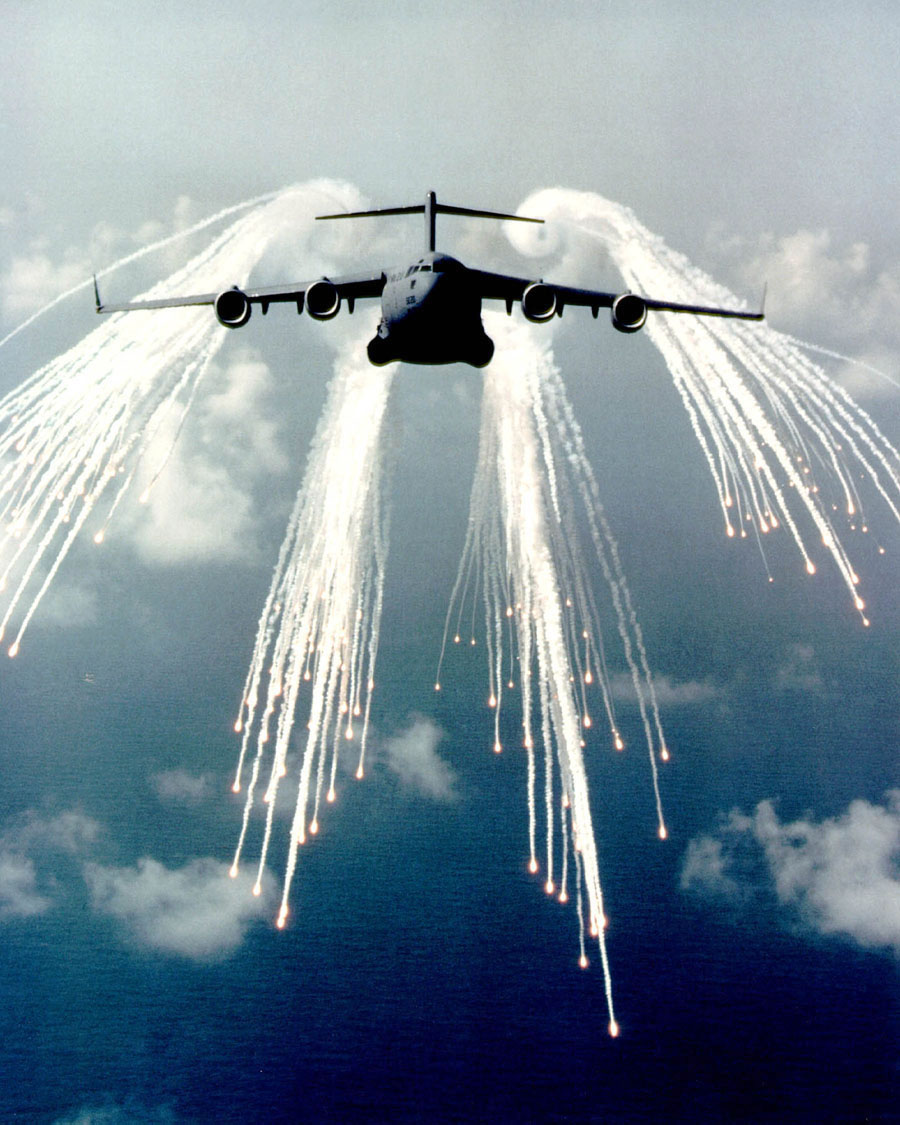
C-17 Globemaster III

The C-17 Globemaster III is the newest, most flexible cargo aircraft to enter the airlift force. The C-17 is capable of rapid strategic delivery of troops and all types of cargo to main operating bases or directly to forward bases in the deployment area. The aircraft is also able to perform tactical airlift and airdrop missions when required. The inherent flexibility and performance characteristics of the C-17 force improve the ability of the total airlift system to fulfill the worldwide air mobility requirements of the United States. The ultimate measure of airlift effectiveness is the ability to rapidly project and sustain an effective combat force close to a potential battle area. Threats to U.S. interests have changed in recent years, and the size and weight of U.S.-mechanized firepower and equipment have grown in response to improved capabilities of potential adversaries. This trend has significantly increased air mobility requirements, particularly in the area of large or heavy outsize cargo. As a result, newer and more flexible airlift aircraft are needed to meet potential armed contingencies, peacekeeping or humanitarian missions worldwide. The C-17 was designed and built with this new world order in mind.